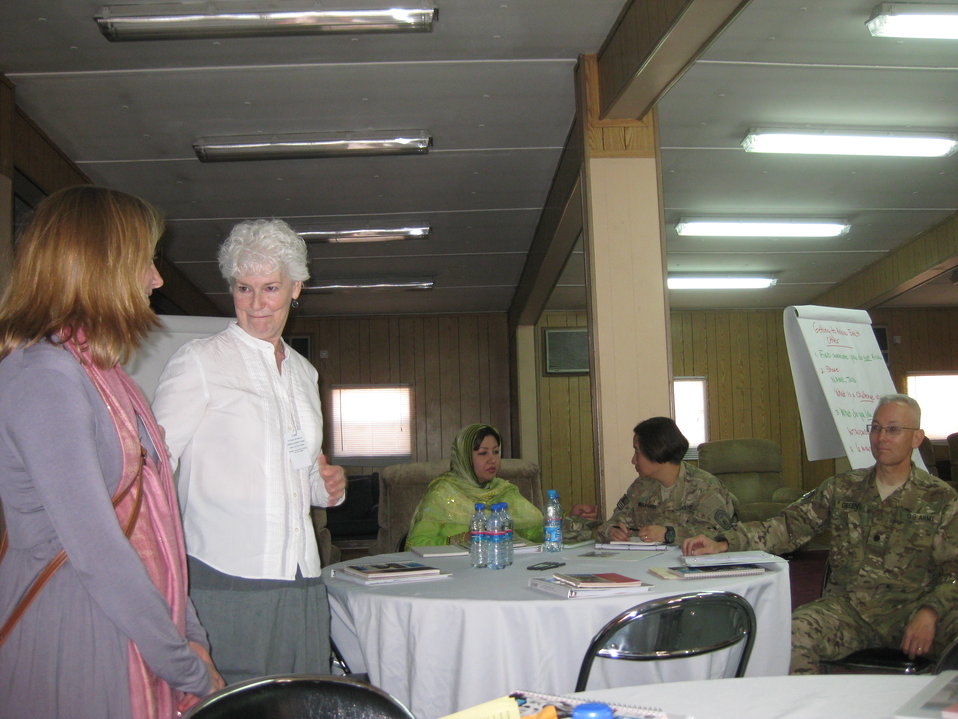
Afghan Youth Voices 017